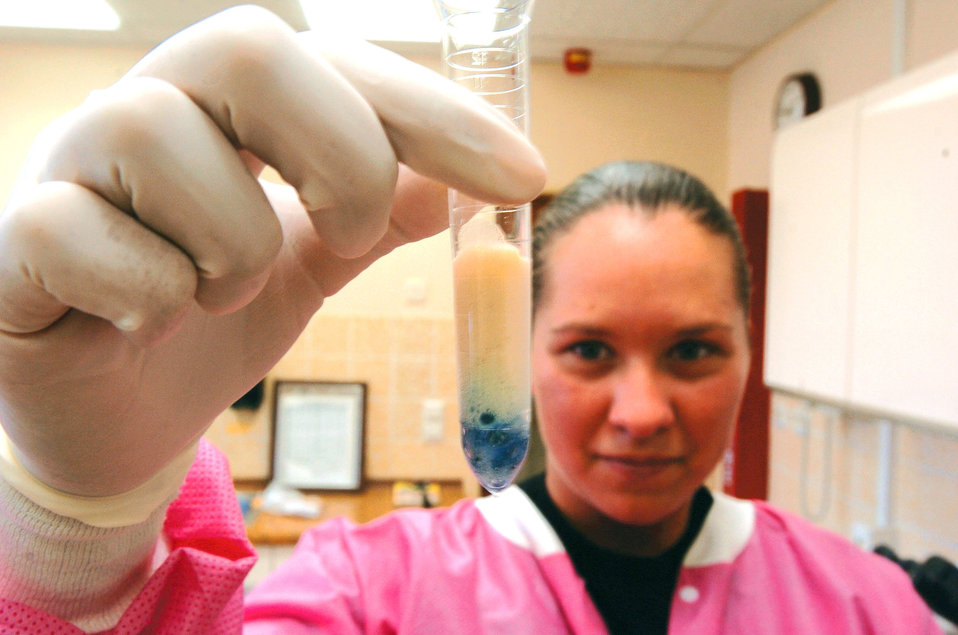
A closer look

SPANGDAHLEM AIR BASE, Germany (AFPN) -- Senior Airman Jennifer Attridge performs a back-up test for glucose in urine at the laboratory here. During urinalysis, lab technicians can check for red and white blood cells, bacteria as well as assist in the diagnosis of potential illnesses. Airman Attridge is assigned to the 52nd Medical Support Squadron.